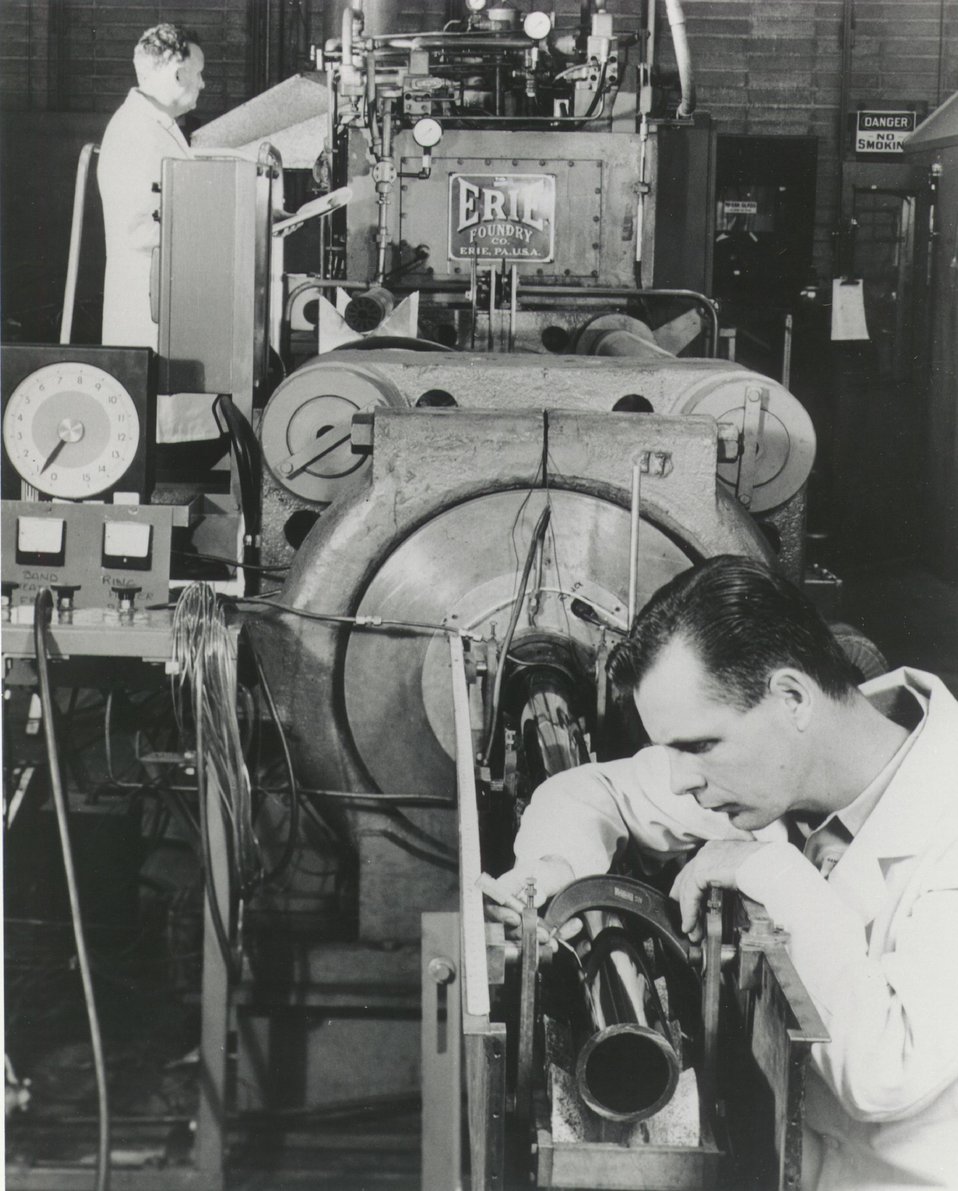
Fabrication engineering work is being carried out at General Atomic Division of General Dynamics in San Diego on graphite extrusions for fuel elements for advanced high temperature gas-cooled reactors. c. 1964